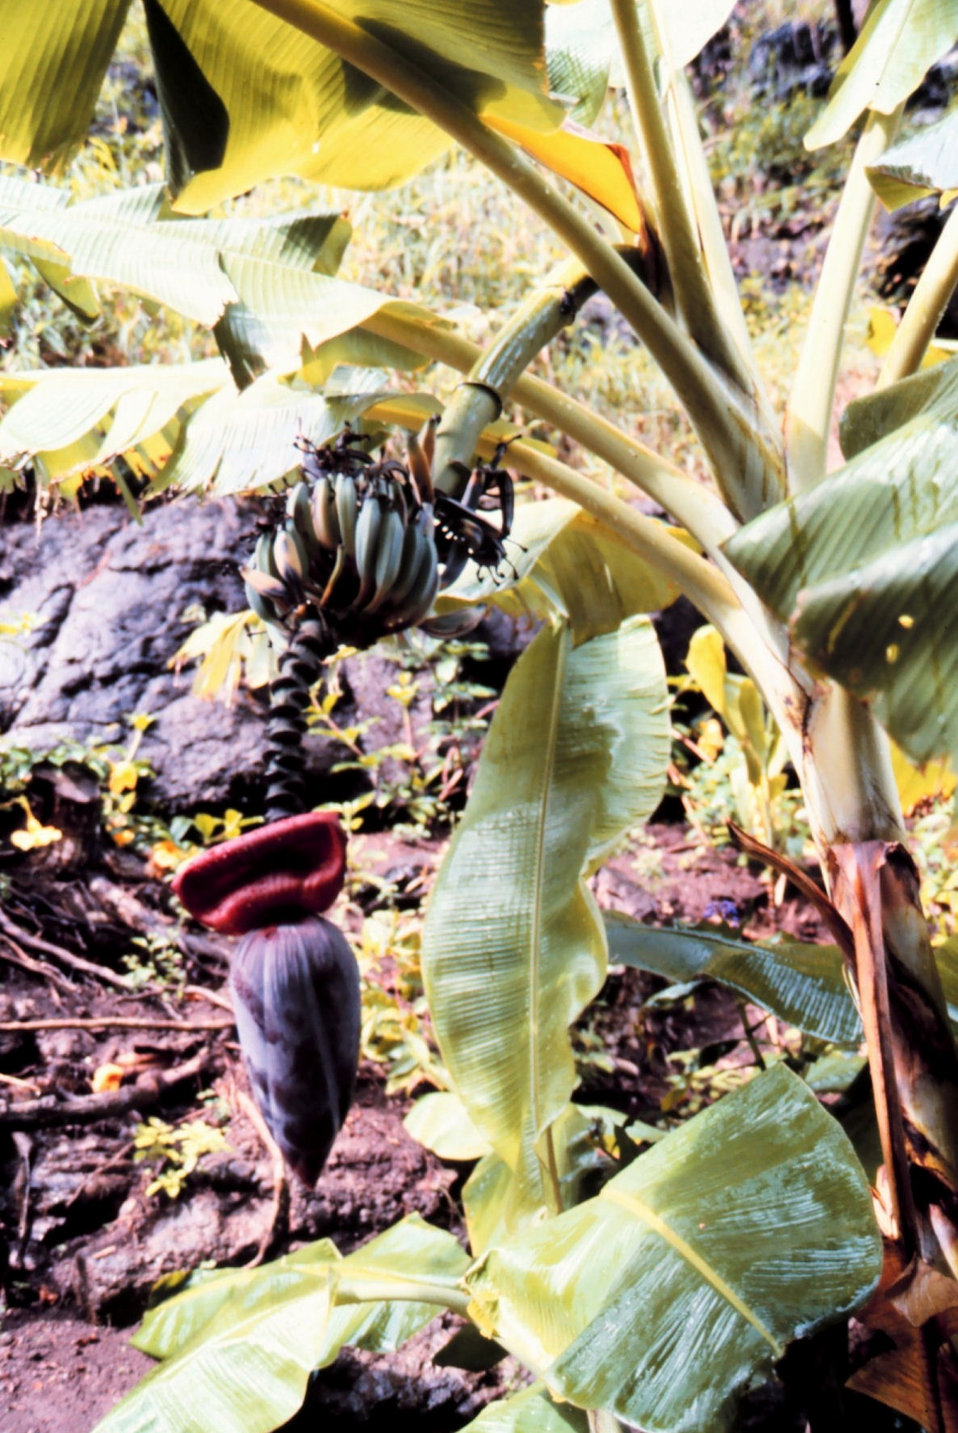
A banana tree